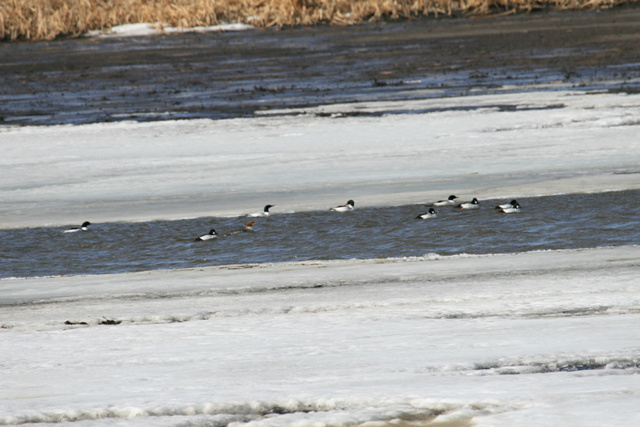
Common Mergansers